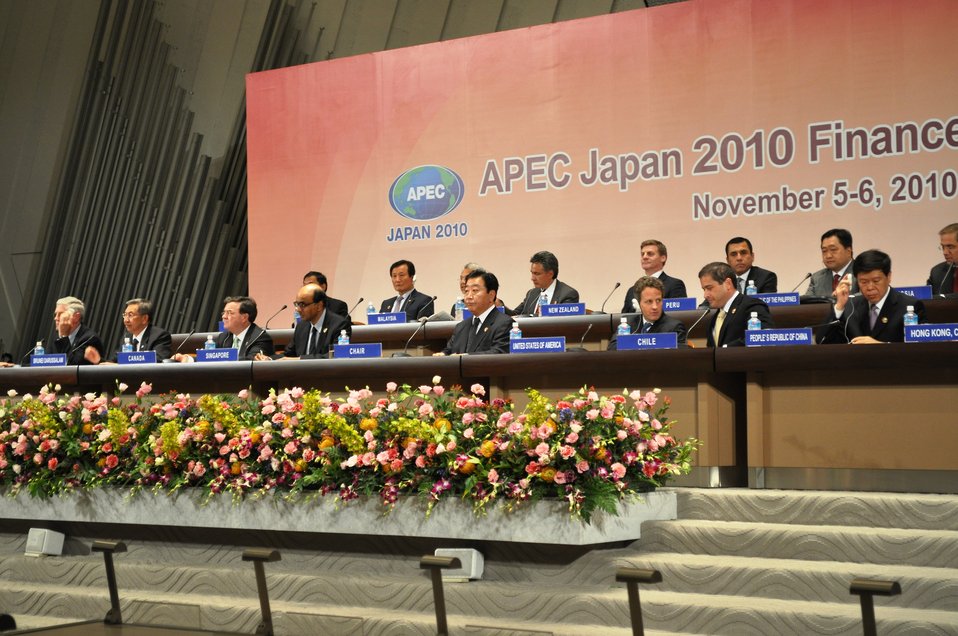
Geithner visit to Asia, November 4-12, 2010

On November 6, 2010, Secretary Geithner participated in the Asia-Pacific Economic Cooperation (APEC) Meeting of Finance Ministers in Kyoto, Japan.